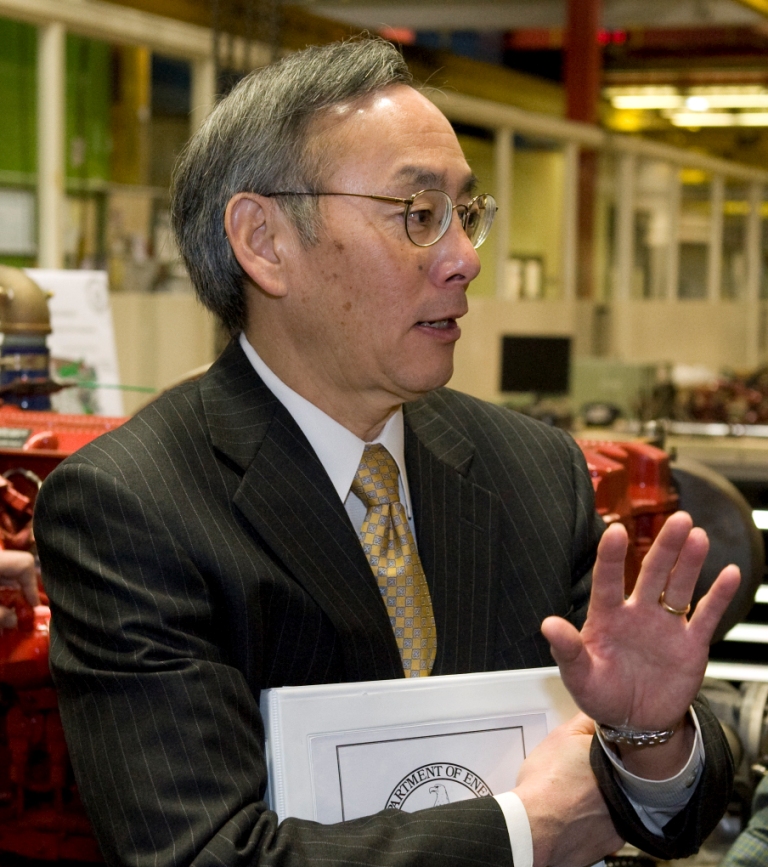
DOE event - Chu 1